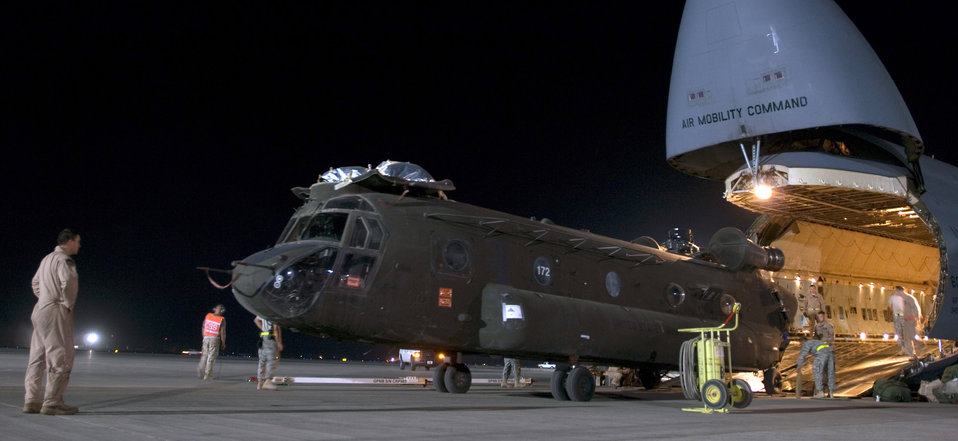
Open wide!

Airmen load a CH-47D Chinook heavy-lift helicopter into the cargo bay of a C-5 Galaxy Aug. 3 at Joint Base Balad, Iraq. More than 950 cargo aircraft, 12,000 tons of cargo and 19,000 passengers are processed each month, making it the busiest aerial port operation in the Department of Defense. This C-5 is deployed from the 22nd Airlift Squadron at Travis Air Force Base, Calif. The Chinook belongs to the Army's Bravo Company, 1st Battalion, 52nd Aviation Regiment, which is deployed to Al Toqaddum, Iraq.